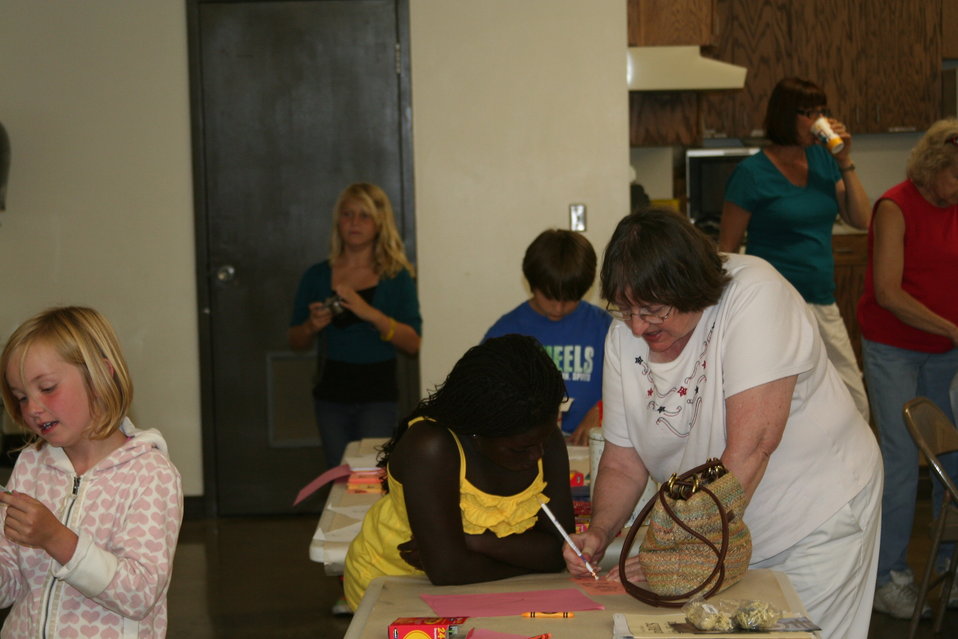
Creatures of the Night 2011